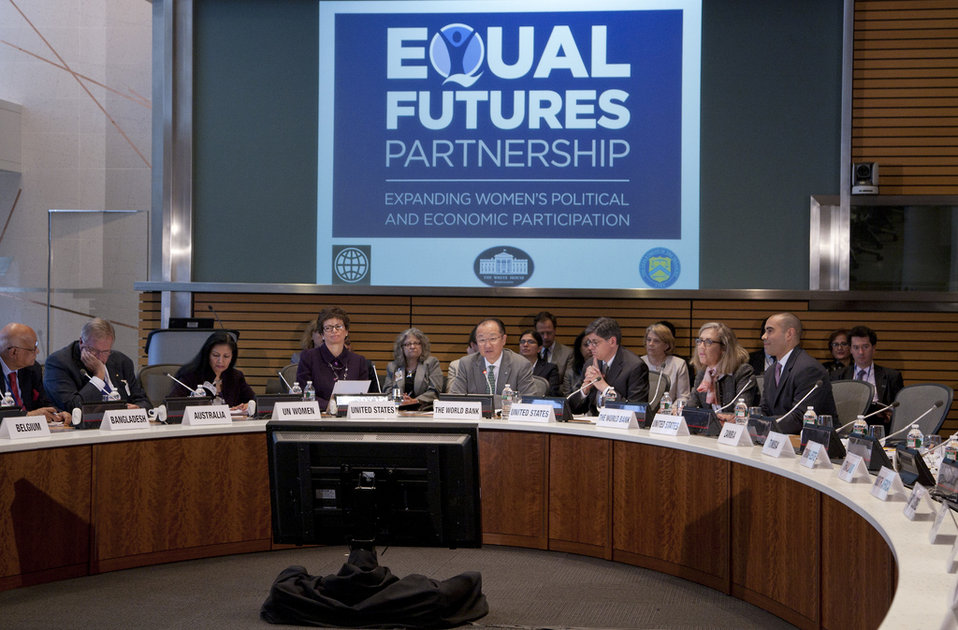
Equal Futures Partnership: From Promise to Progress 2013 Spring Meetings

April 18, 2013 - Washington DC., 2013 World Bank / IMF Spring Meetings. Equal Futures Partnership: Breaking Down Barriers to Women's Political and Economic Empowerment with World Bank Group President Jim Yong Kim; U.S. Treasury Secretary Jack Lew, Senior Advisor to the President of the United States Valerie Jarrett, moderated by World Bank Group Managing Director Caroline Anstey.